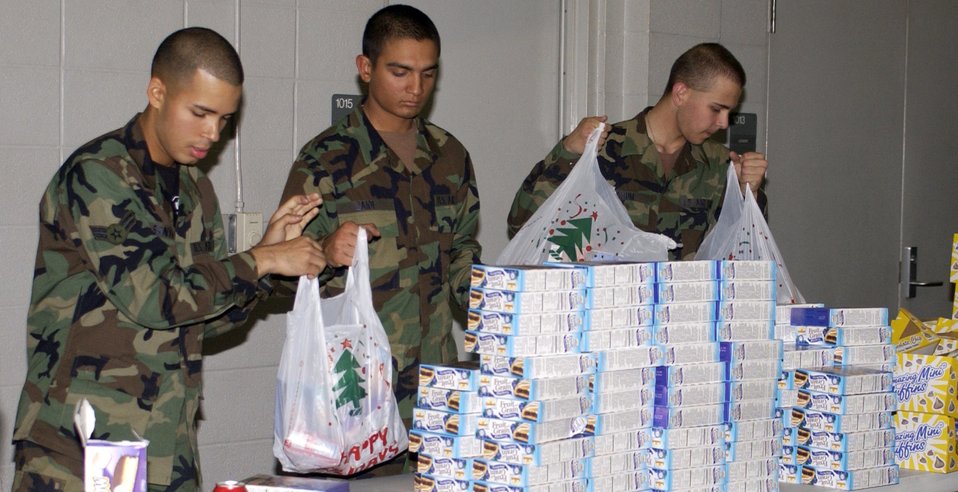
A helping hand

KEESLER AIR FORCE BASE, Miss. (AFPN) -- Airman 1st Class Carlos Santiago (left), Airman Basic Hasan Zaida and Airman Basic Matthew Saum pack goodie bags for children at the Biloxi Fire Station. The Airmen, with the 336th Training Squadron, assisted with Operation Win for Kids.